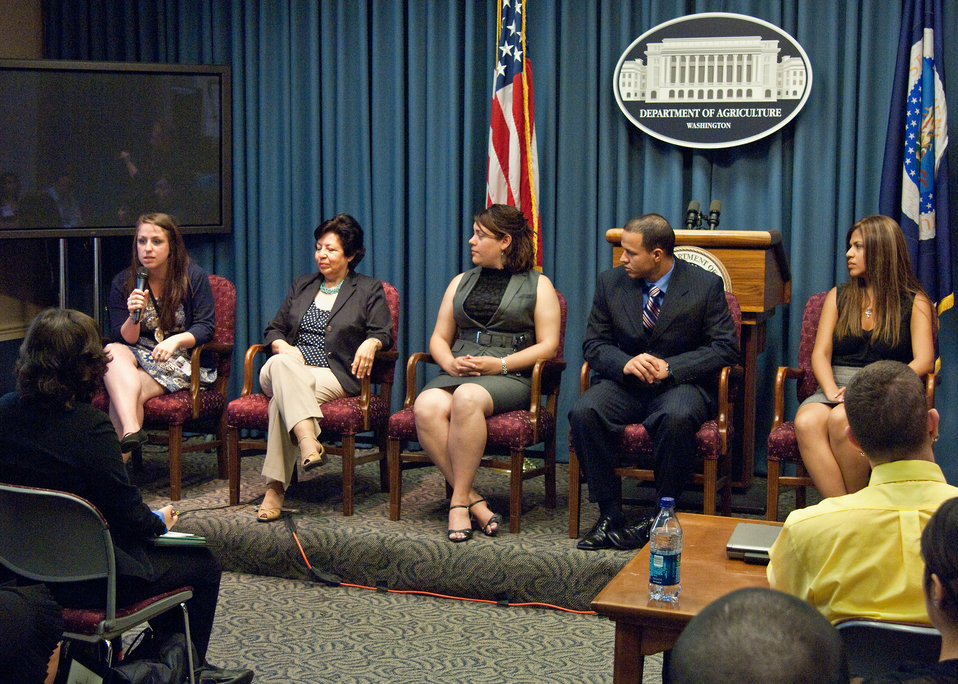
From left: Taurra Sun Eagle, Office of the Secretary, Office of Tribal Relations, Yolanda Provost, Farm Service Agency, Human Resources Division, Paola Felix, Branch Chief, Foreign Agricultural Service, Jonathan Perez, Financial Analyst, Office of the Chief Financial Officer and Maritza Huerta, Program Specialist, U.S. Forest Service members of the USDA HACU and 1994 Tribal College, Alumni Panel offer their experiences to students at the USDA HACU and 1994 Tribal College Summer Internship Orientation Program at the Department of Agriculture in Washington, DC, Monday, June 7, 2010. USDA Photo 10di1390-129.